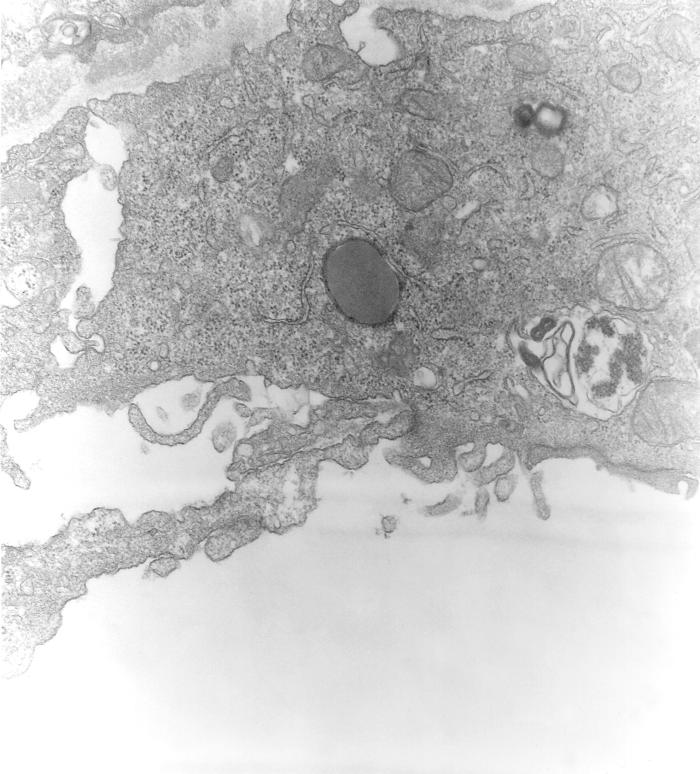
This 1976 transmission electron micrograph (TEM) depicted a hypertrophic peritoneal mesothelial cell of mouse that had been experimentally infected intraperitoneally with Orientia tsutsugamushi rickettsial micro-organisms. A disintegrating organism was shown within a host cell's phagocytic vacuole.